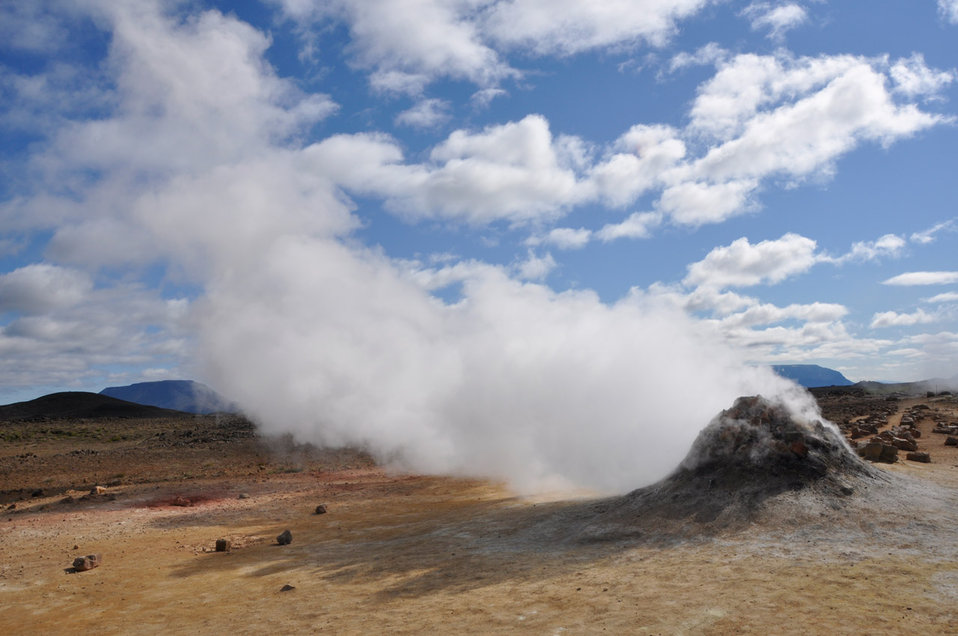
Hot springs in iceland.